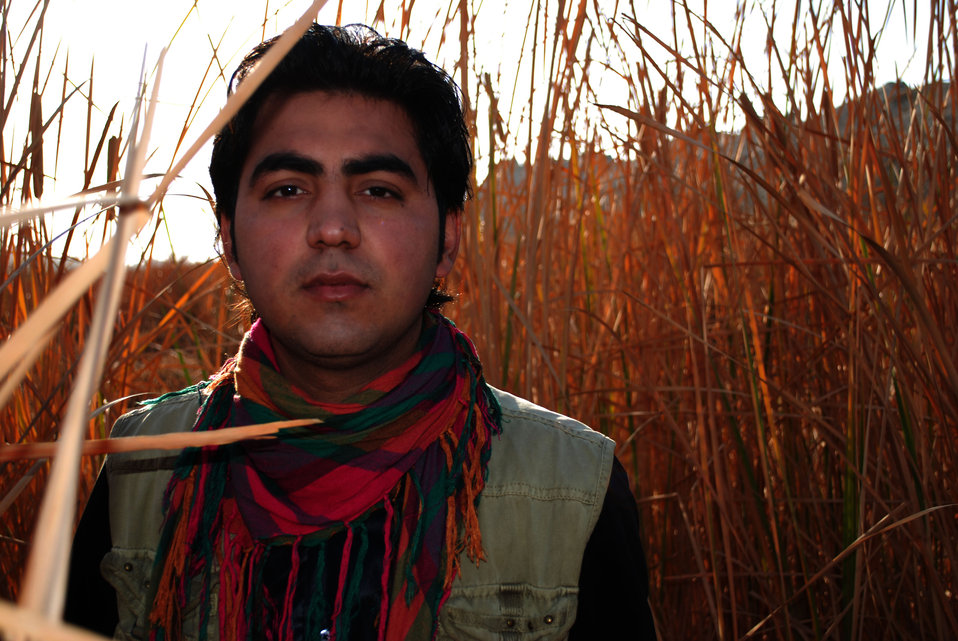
'On the Road' in Balkh Province